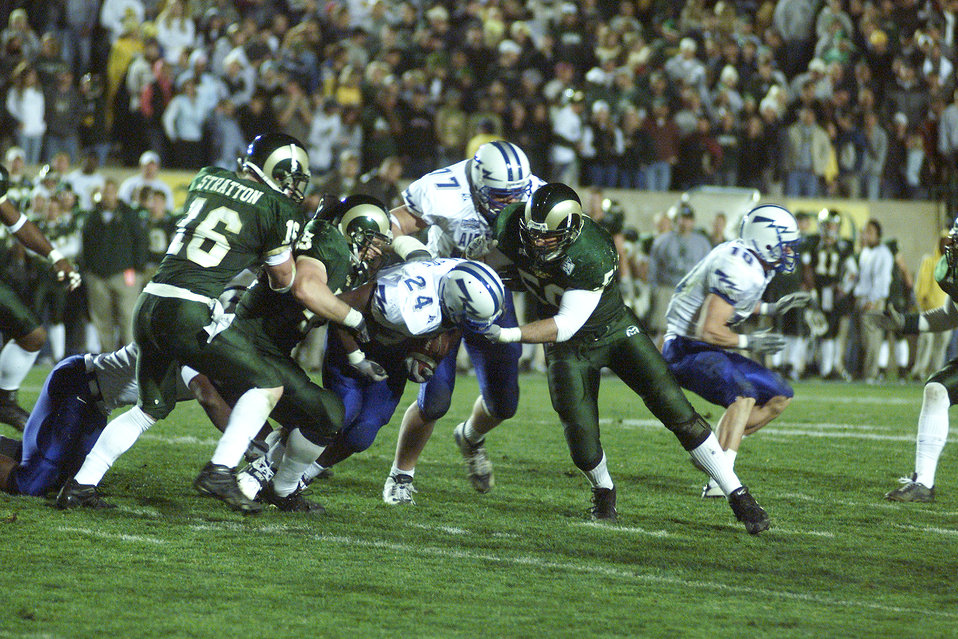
CSU grounds Falcons

FORT COLLINS, Colo. -- Air Force Academy Falcon fullback Adam Cole (24) is sandwiched between three Colorado State University defenders. Cole carried six times for 44 yards during the Falcons' 30-20 loss to CSU on Oct. 16.